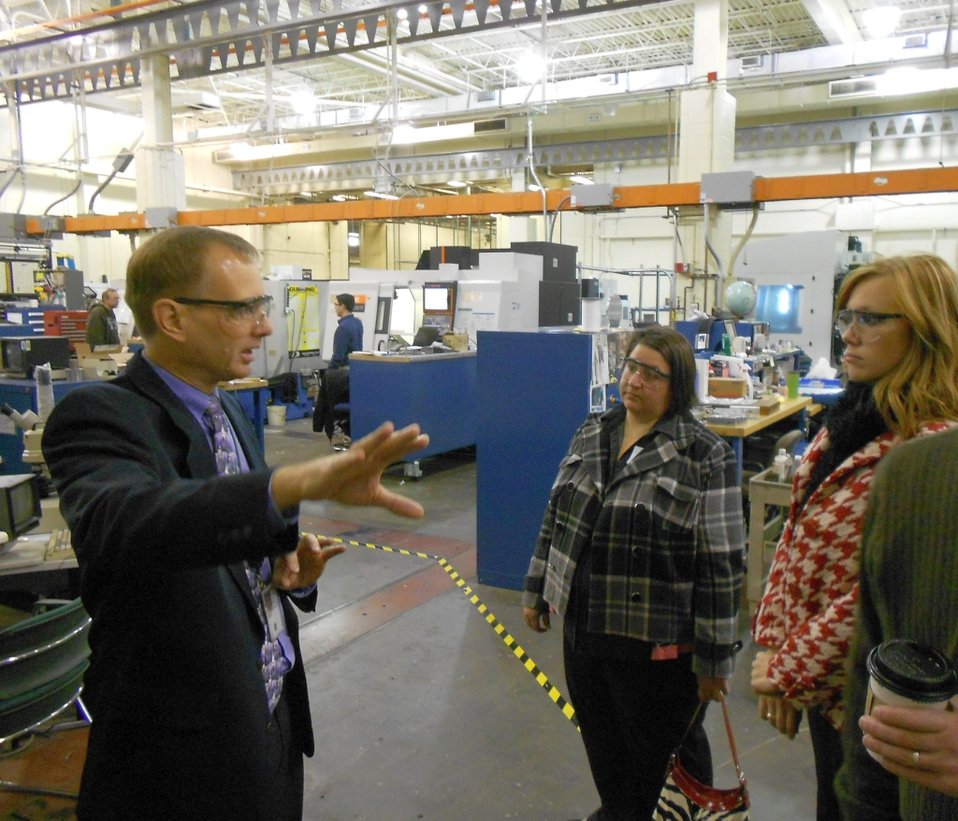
Machine Lab Tour #1

Kevin Jurrens (left) of the Intelligent Systems Division in the NIST Engineering Laboratory briefs Congressional Staff members Marcy Gallo (center) and Melia Jones (right) from the House of Representatives Committee on Science, Space, and Technology on modeling and simulation of manufacturing processes ongoing in NIST machine shops.